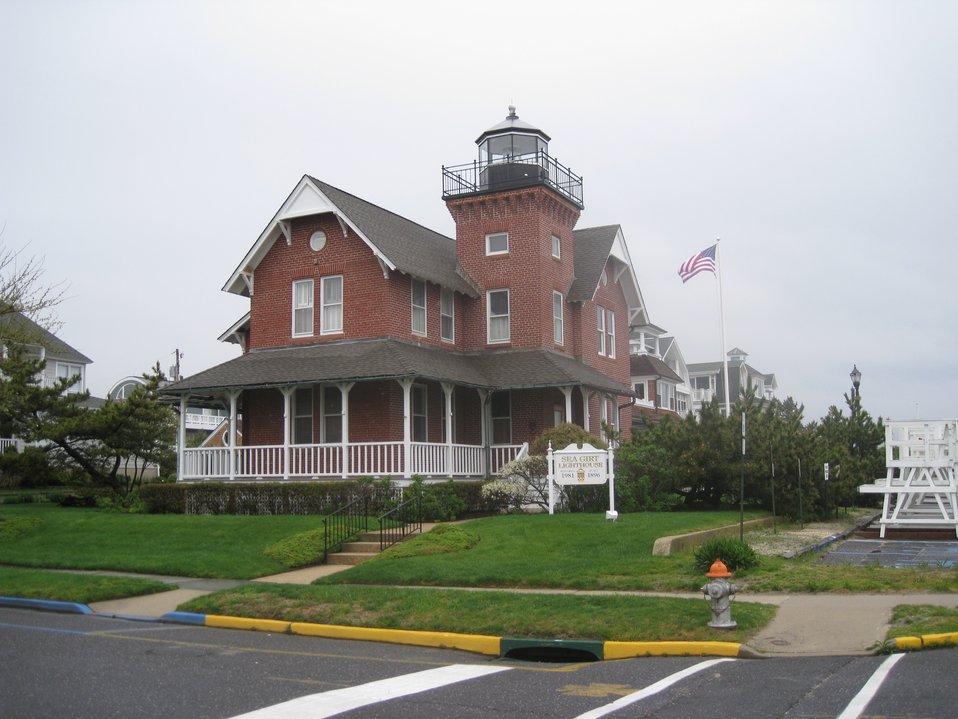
Sea Girt Lighthouse.